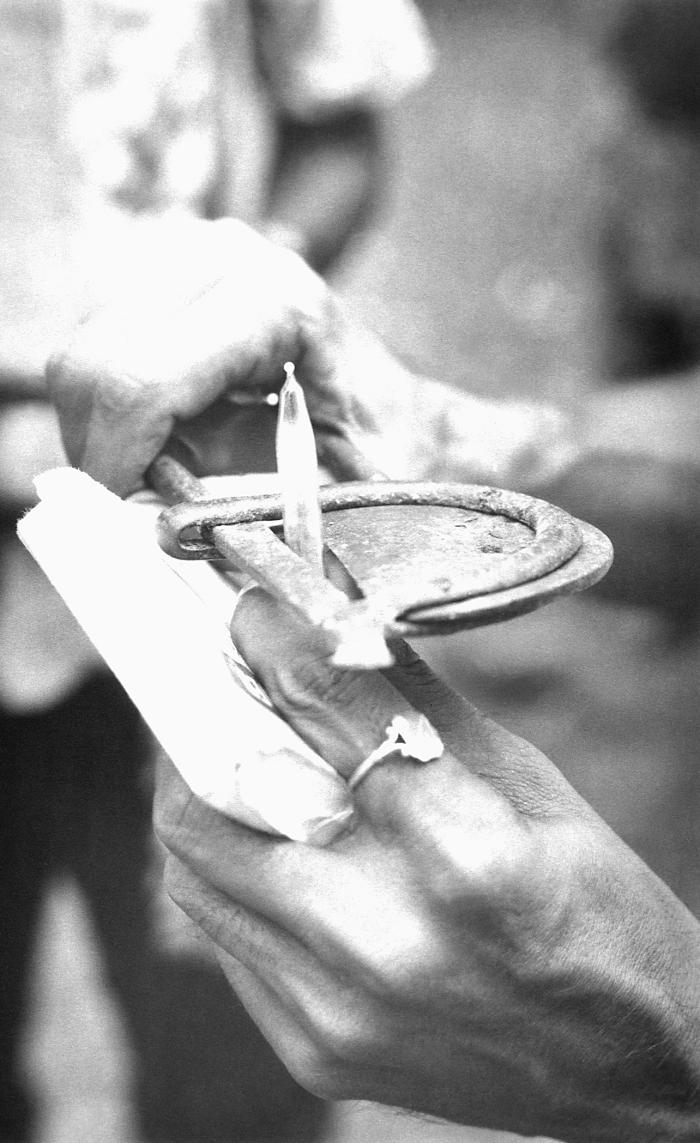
This image depicted a technician in a Bangladesh laboratory who was in the process of creating smallpox vaccine. It was taken by Dr. Stan Foster, EIS, Officer, Class of 1962, while he was part of the worldwide Global Smallpox Eradication Campaign of the late 1960s, early 1970s.